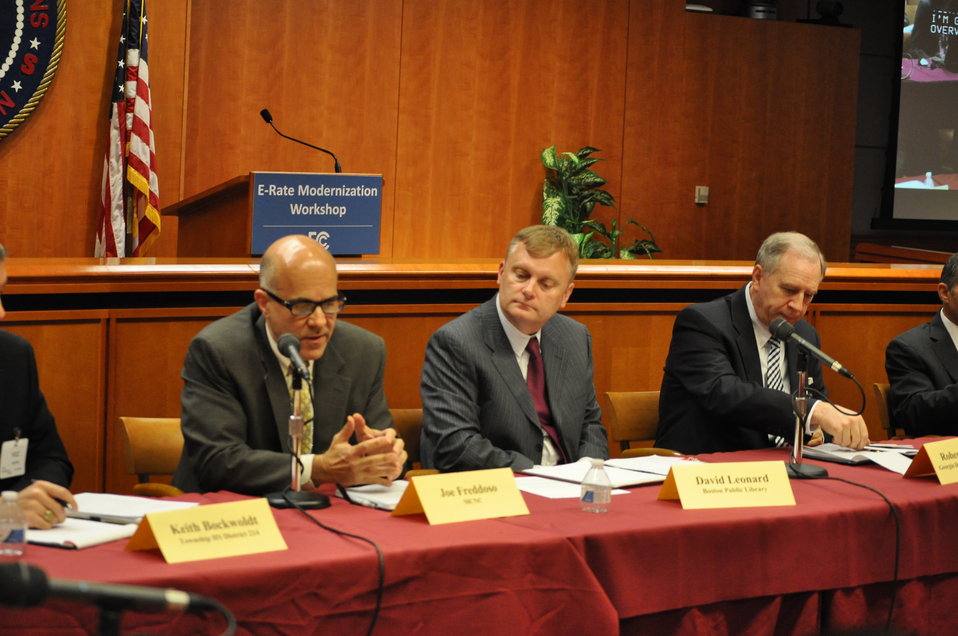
5.6.2014 E-Rate Modernization Workshop

Education and Library Technology Experts Roundtable: Enabling the Lowest “E-rate” for Schools and Libraries